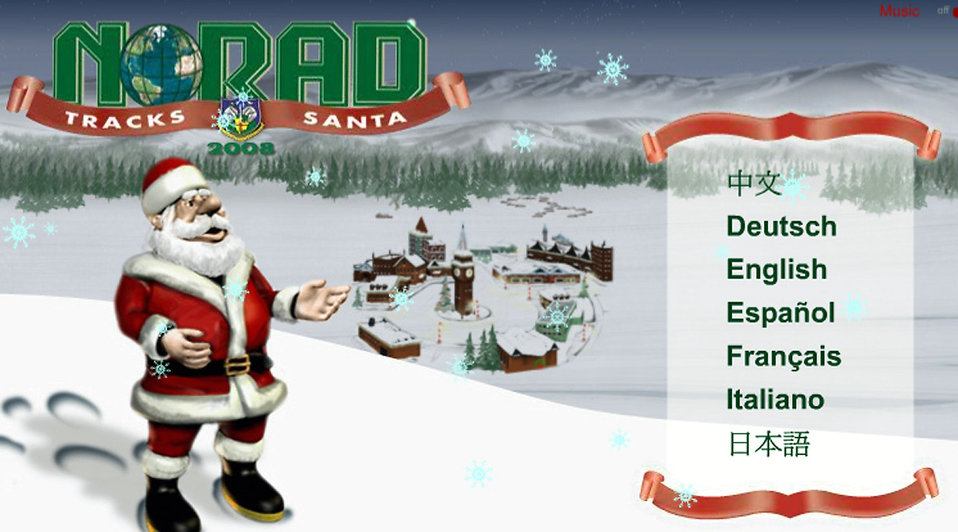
NORAD set to track Santa

Santa's fans can track his journey around the world on Dec. 24 at North American Aerospace Defense Command's special Web site: www.noradsanta.org. The site also features the history of NORAD Tracks Santa program, has interactive games and more.